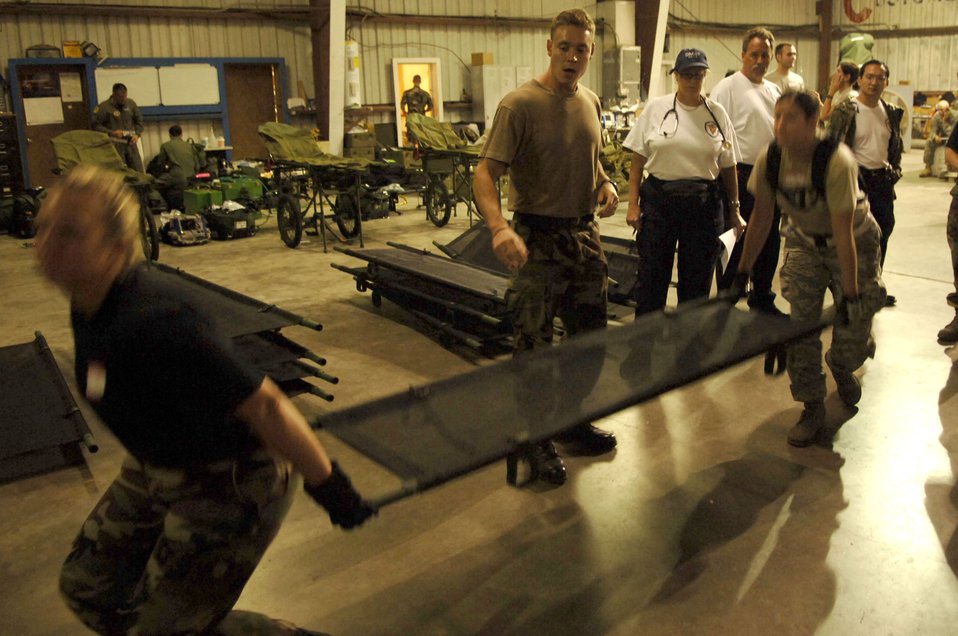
MacDill AFB medical team supports hurricane relief efforts

Members of the mobile aeromedical staging facility team from MacDill Air Force Base, Fla., help train a disaster medical assistance team from San Benardino, Calif., on proper litter lifting and carrying techniques. The Air Force MASF team, along with civilian agencies, were deployed to Corpus Christi, Texas, in support of Hurricane Ike evacuation efforts.